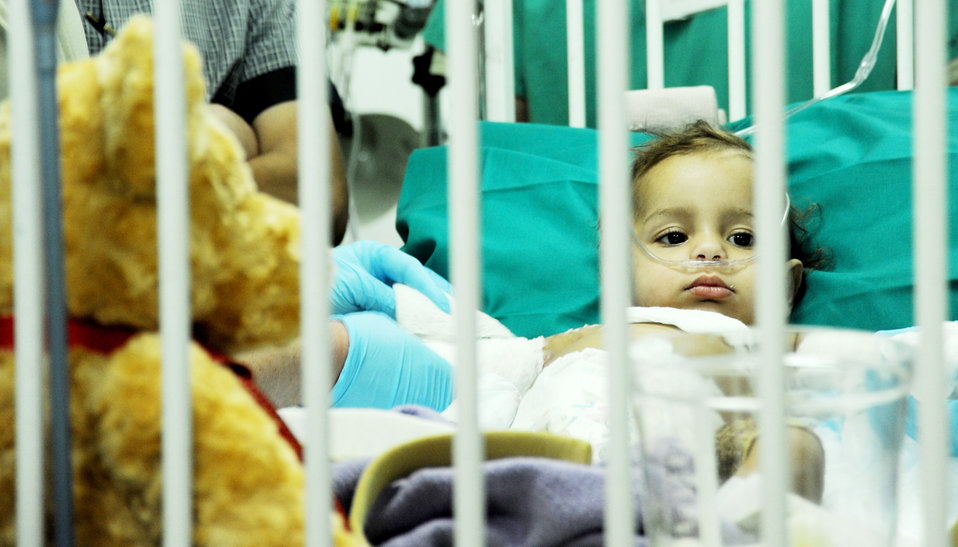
Iraqi doctors visit Air Force Theater Hospital for medical education conference

An Iraqi child recovering from third-degree burns lies in a crib at the Air Force Theater Hospital Oct. 30, 2009, at Joint Base Balad, Iraq. Airmen of the 332nd Expeditionary Medical Operations Squadron provided treatment for her injuries, suffered in a household accident.